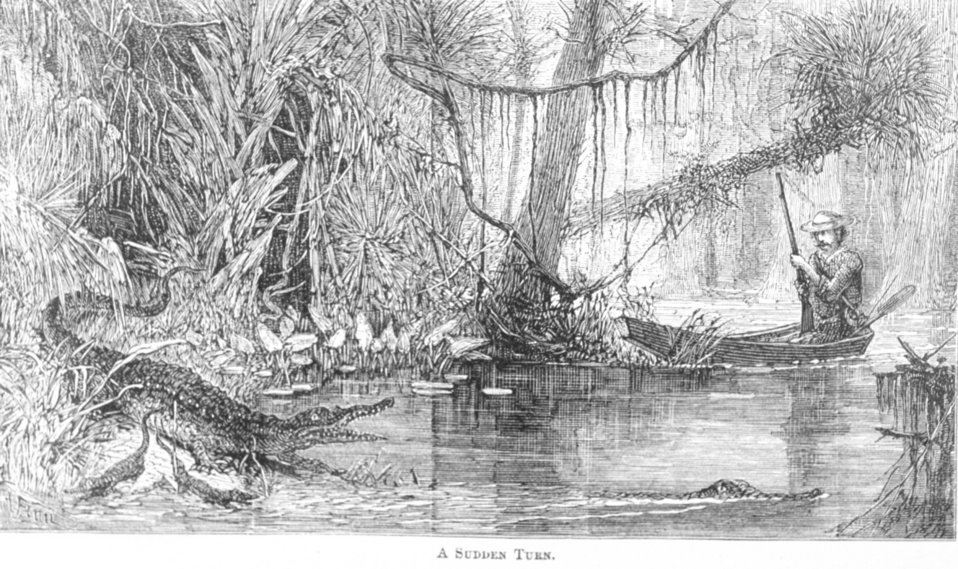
A Sudden Turn - in 'Florida for Tourists, Invalids, and Settlers' by George M. Barbour, 1881. Library Call No. F316 .B23 1881. A scene in central Florida when a hunter confronts a mother alligator defending her nest.